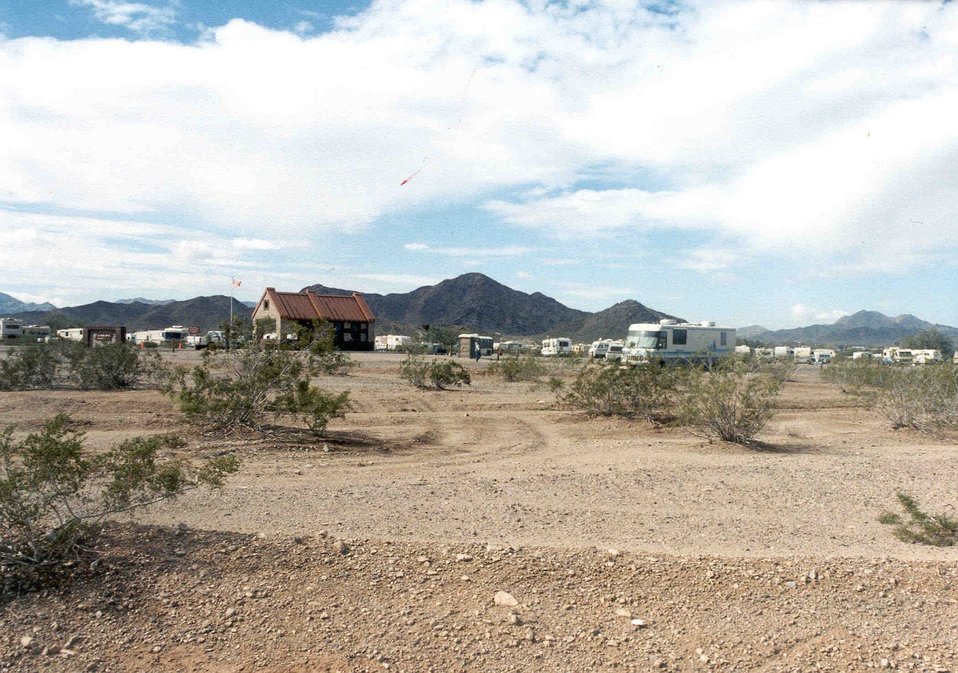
Long Term Visitor Area during the peak season